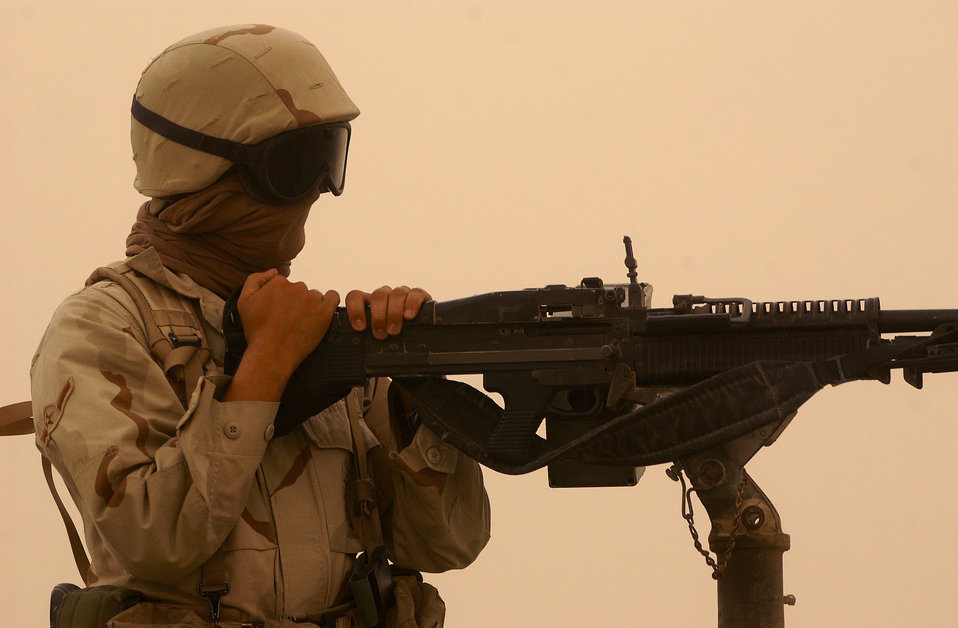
Sitting out the storm

OPERATION IRAQI FREEDOM -- Airman Matthew Jensen sits atop a HUNVEE during a sand storm at a forward-deployed location March 26. Jensen is assigned to the 379th Expeditionary Security Forces Squadron.